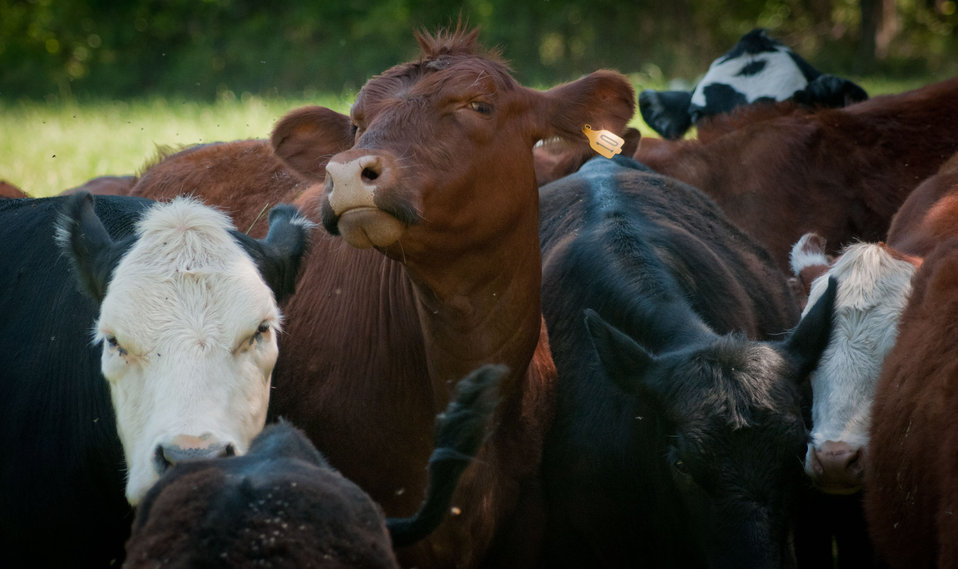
Cattle graze on grass at the Tuckahoe Plantation, in Goochland County, VA area on Thursday, May 5, 2011. An electrified fence keep herd in the proper pastures where they graze on the grass and leave nutrient rich manure to revitalize the soil, enhancing regrowth. The plantation was the boyhood home of President Thomas Jefferson from 1745 until 1752, today it is a working farm with cattle, sheep, chickens and rabbits supplying meats to Fall Line Farms a local food hub. Fall Line Farms offers a wide variety of household food staples and specialty items on an ever changing inventory of fruits, vegetables, meats, soaps, eggs, cheeses, flowers, honey, pastas, sauces, syrups, baked goods, mushrooms, flour and grains. Suppliers post what they have on a Lulus Local Food online listing and customers make their selection. Every Thursday, suppliers team up to deliver customized orders to, one of several pick-up points, designated by the customer in or around the Richmond, VA area.